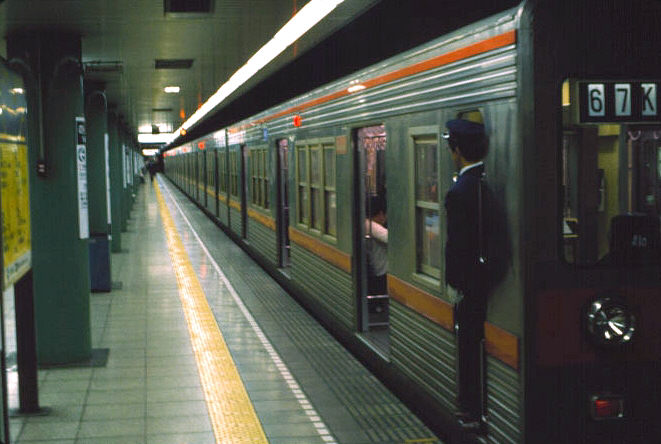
Tokyo subway platform and train.